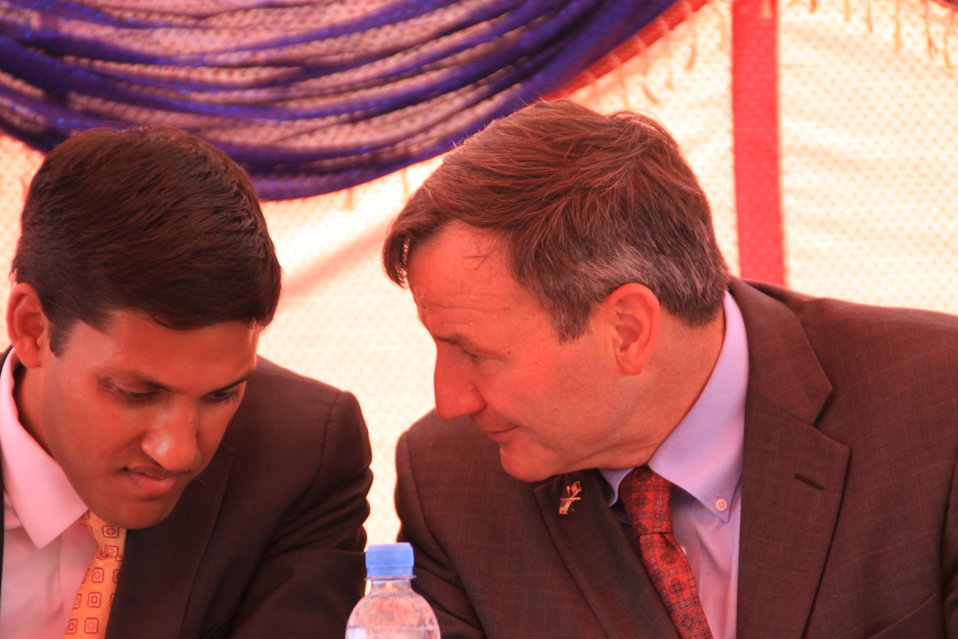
Badam Bagh Farm